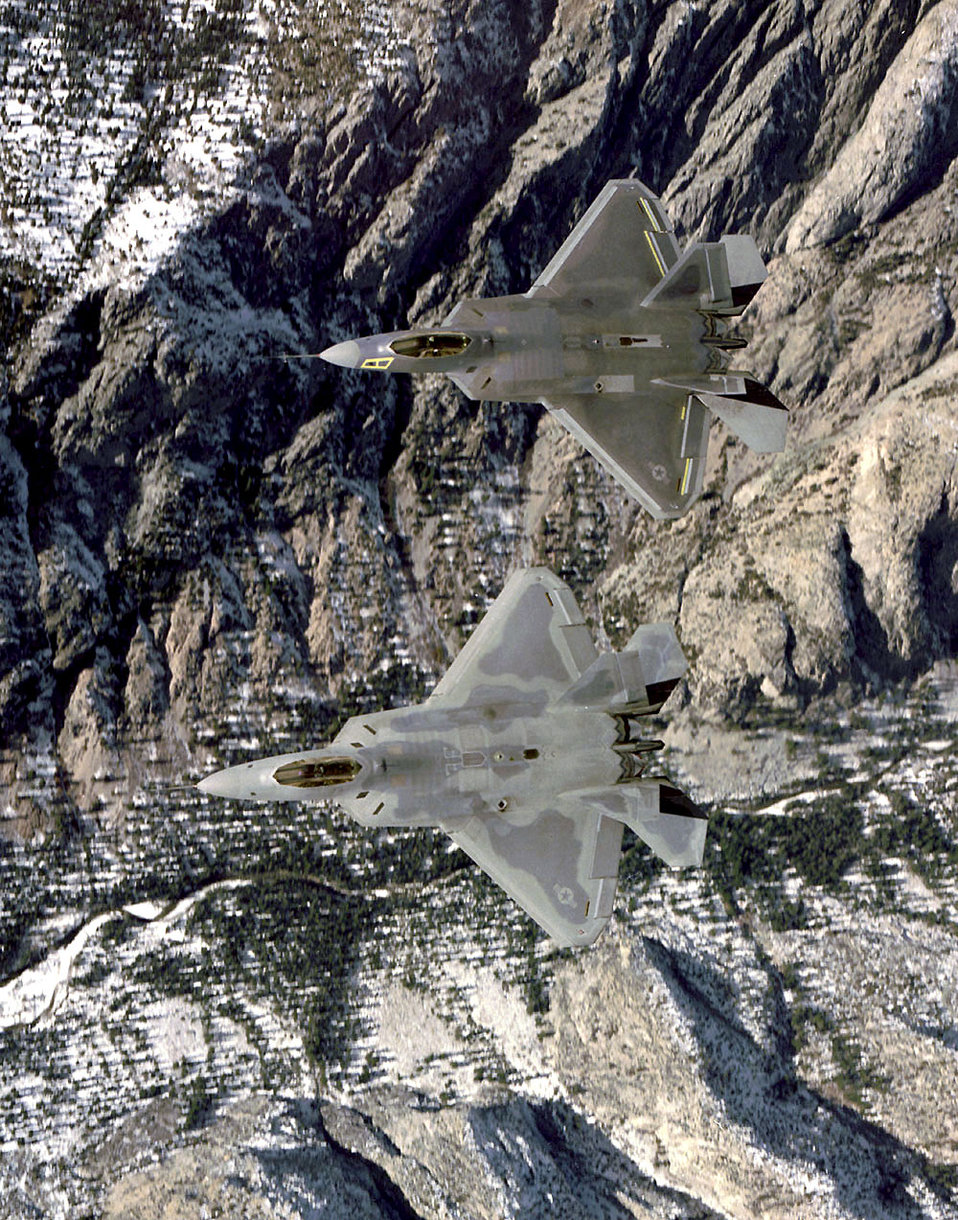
Raptors from the top

FILE PHOTO -- The F/A-22 is an air-superiority fighter with improved capability over current Air Force aircraft. From the inception of the battle, the F/A-22's primary objective will be to establish air superiority through the conduct of counter air operations. The F/A-22 also has an inherent air-to-surface capability. A combination of improved sensor capability , improved situational awareness, and improved weapons provides first-kill opportunity against the threat.